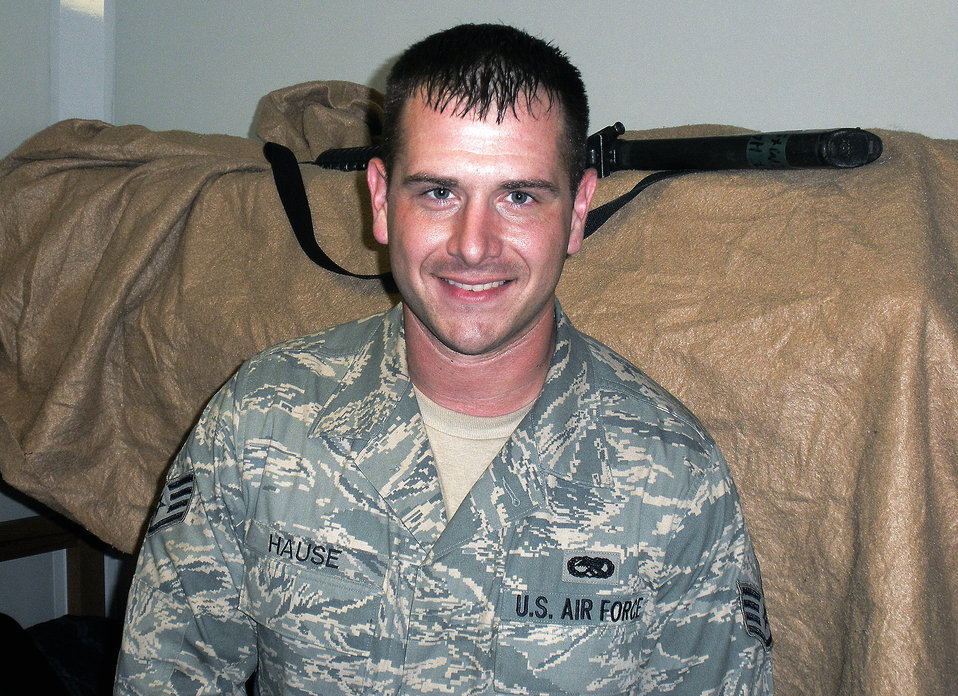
Joint Base Balad Airmen remember fallen wingman

Staff Sgt. Brian Hause, 29, died from a noncombat related illness Oct. 23 while at Joint Base Balad, Iraq. He was deployed to the 332nd Expeditionary Maintenance Squadron from Shaw Air Force Base, S.C. Here he is pictured in his living quarters at Joint Base Balad.